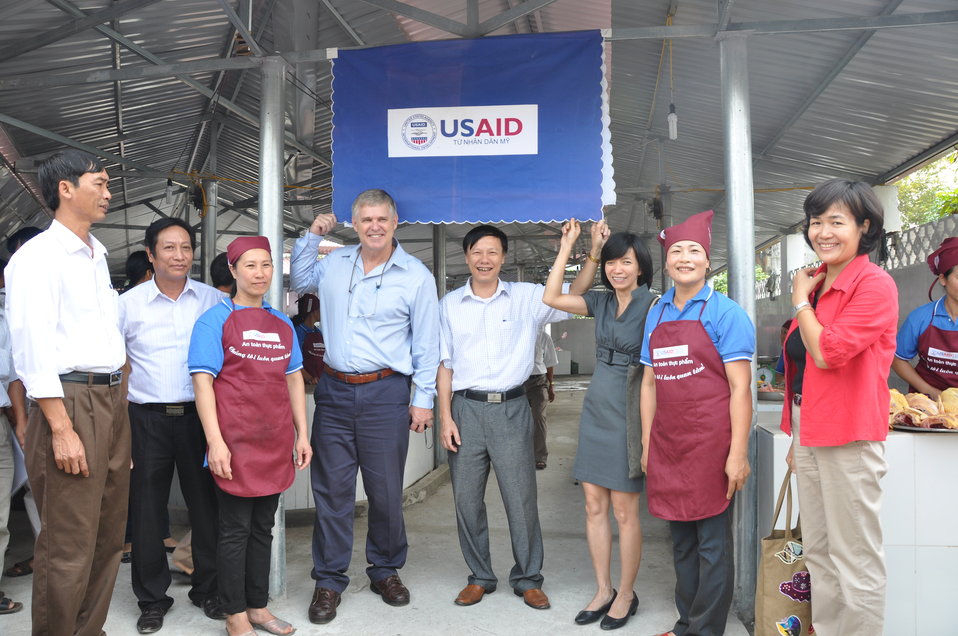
Handover Ceremony Hoa Mac Market, Ha Nam

October 26, 2012 Photo: Richard Nyberg, @USAIDVietnam